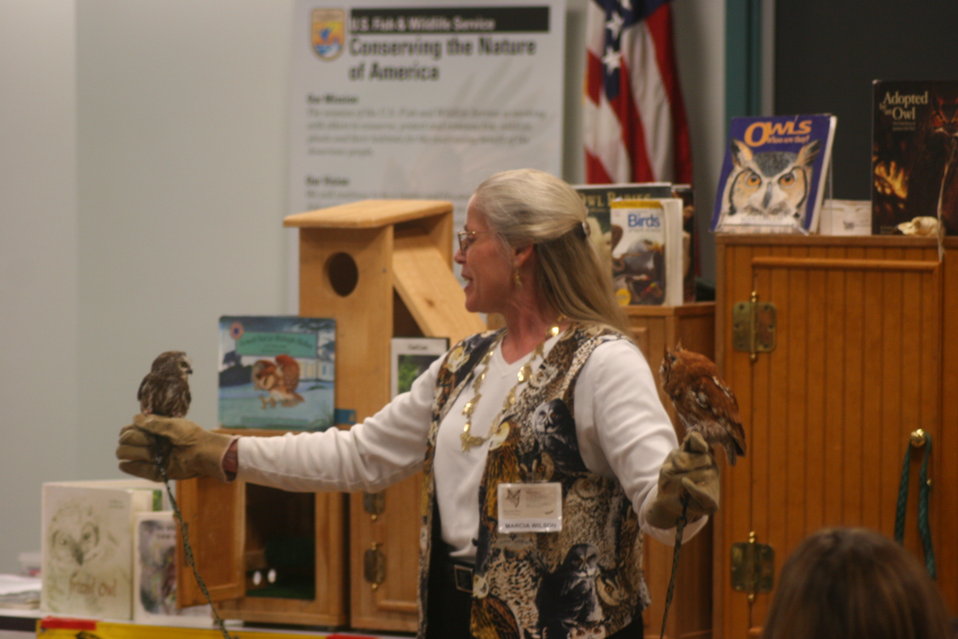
Screech Owl and Saw Whet Owl

Live bird demonstration